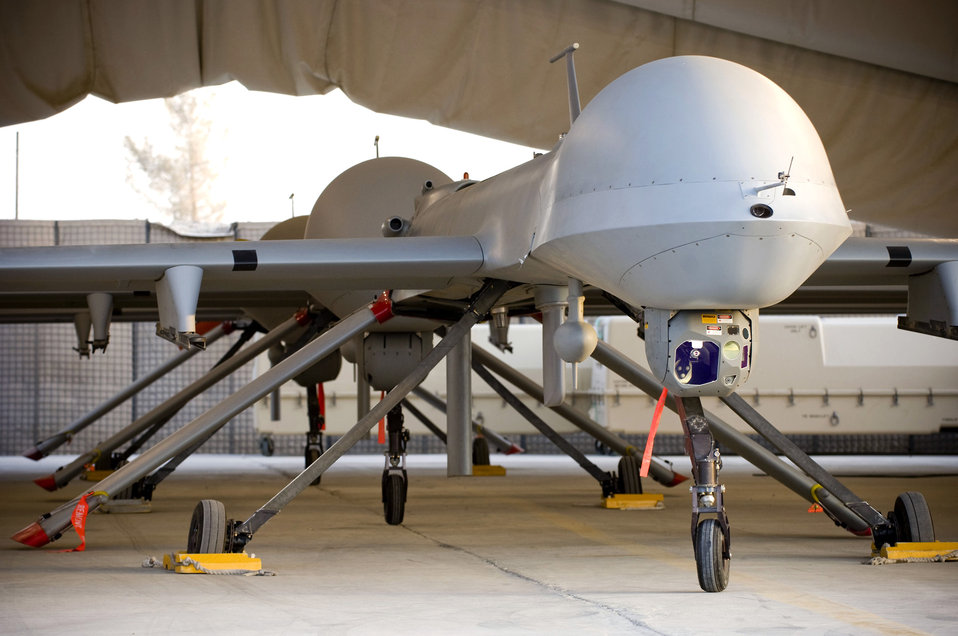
Predators on patrol in Afghanistan

Three MQ-1 Predators sit ready for launch in a hangar Oct. 25 at a base in southern Afghanistan. The Predator is a multirole attack reconnaissance unmanned aircraft system incorporating advanced surveillance capabilities with the offensive power of two AGM-114 Hellfire missiles.